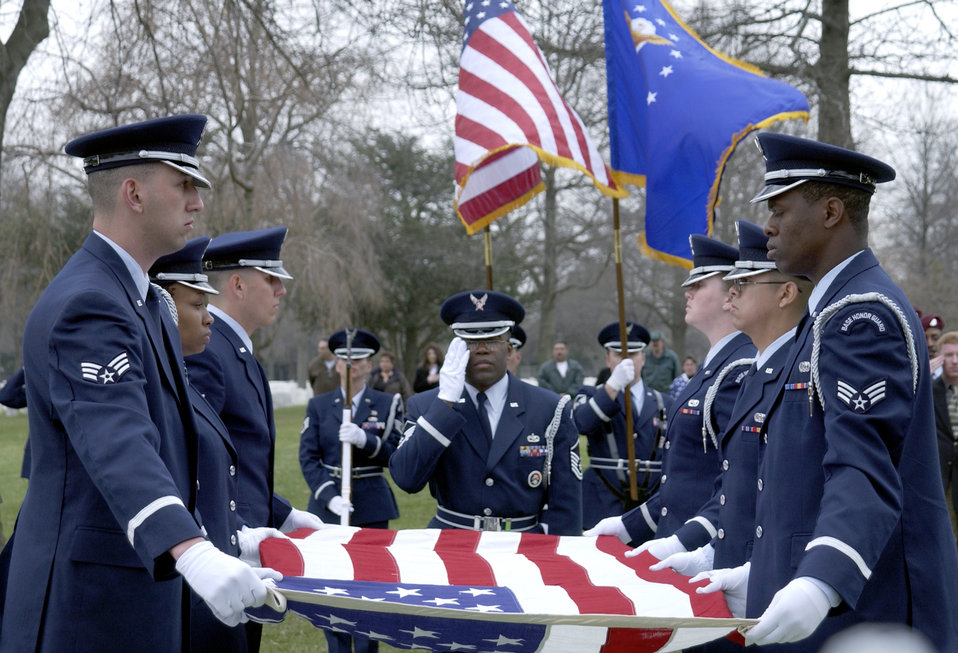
Full honors

LONG ISLAND, New York -- Honor Guard members of the 305th Air Mobility Wing, McGuire Air Force Base, New Jersey, remove the American Flag from Master Sgt Michael Maltz's casket. Master Sgt Maltz of the 38th Rescue Squadron, Moody Air Force Base, Georgia, was killed when his Pave Hawk helicopter crashed 18 miles north of Ghanzi, Afghanistan on the way to rescue Afghan children March 23. The funeral took place April 3.